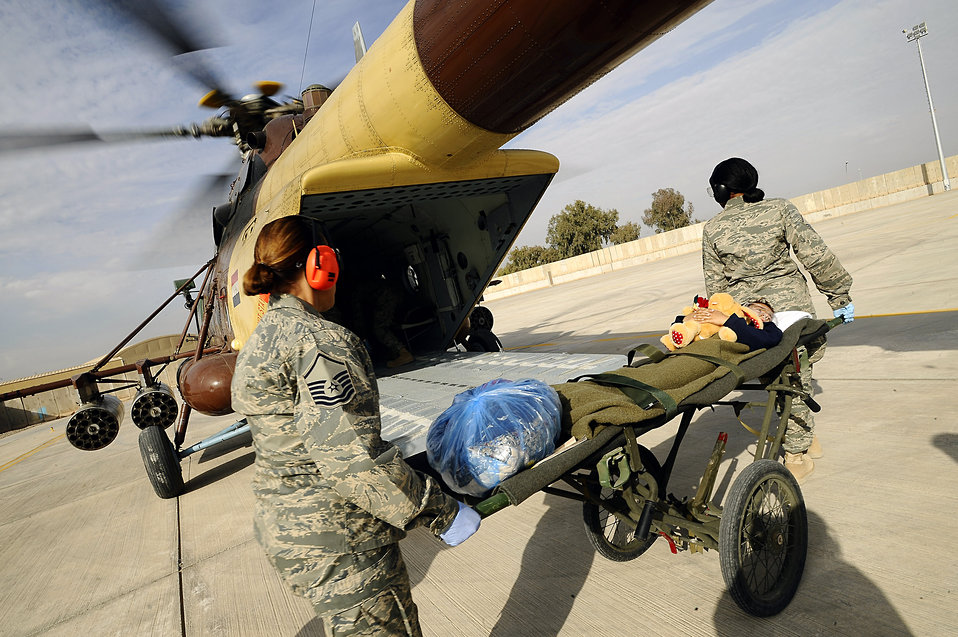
Iraqi aeromedical evacuation mission continues to evolve

Master Sgt. Ana Ortiz (left) and Master Sgt. Diana Nelson transport Mustafa Jasim to an Iraqi air force Mi-17 Hip helicopter at Joint Base Balad, Iraq, Dec. 20. Mustafa, his brother Ali and an Iraqi police officer were transported from Balad to the 86th Combat Support Hospital in Baghdad. Sergeant Ortiz, the 332nd Expeditionary Logistics Readiness Squadron Personnel Support for Contingency Operations superintendent, and Sergeant Nelson, the PERSCO NCO in charge, are deployed from the Connecticut Air National Guard's 103rd Airlift Wing.